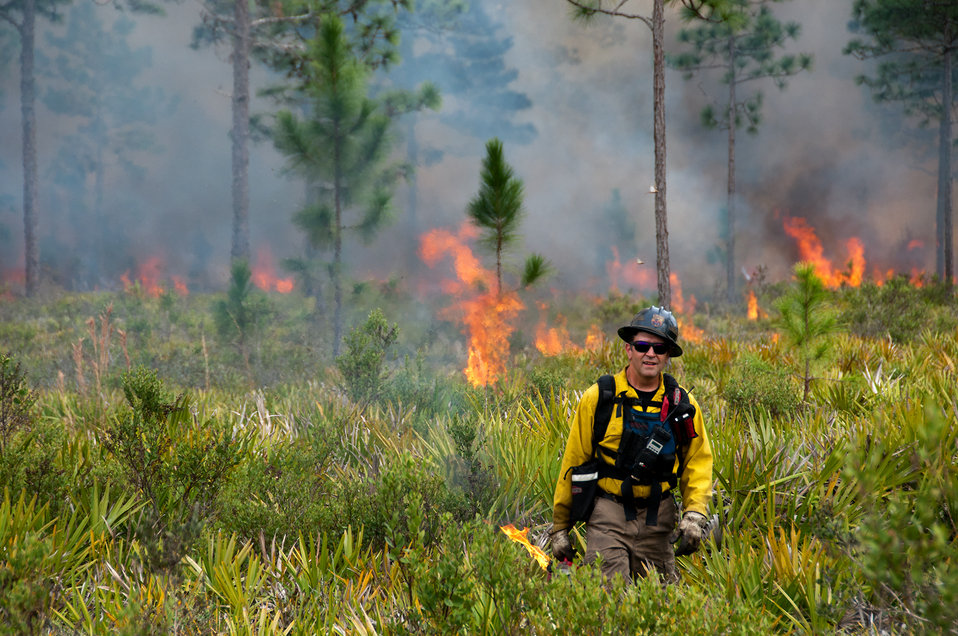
Lake Woodruff Volusia 5 Prescribed Fire Febuary 2014

USFWS firefighter Kris Kasper carries fire through the palmetto to the fireline. On February, 12 2014 USFWS firefighters conducted a 137 acre prescribed fire at Lake Woodruff NWR to reduce the wildfire risk and enhance the wildlife habitat on the southern end of the refuge.